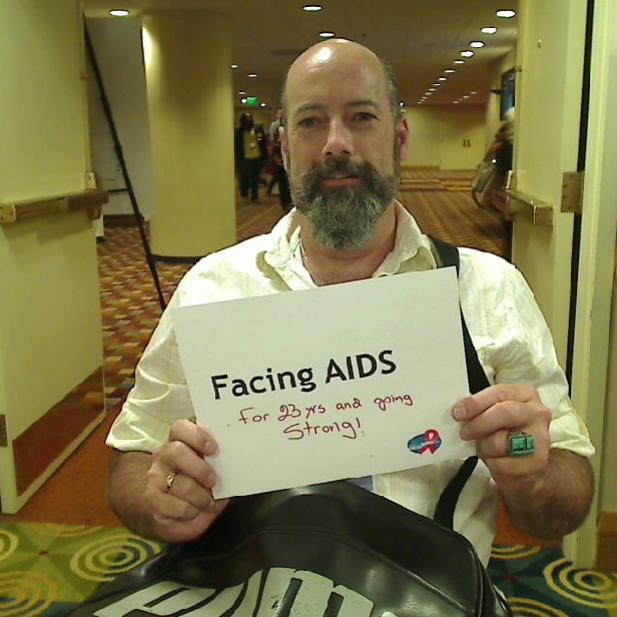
Facing AIDS for 23 yrs and going Strong!